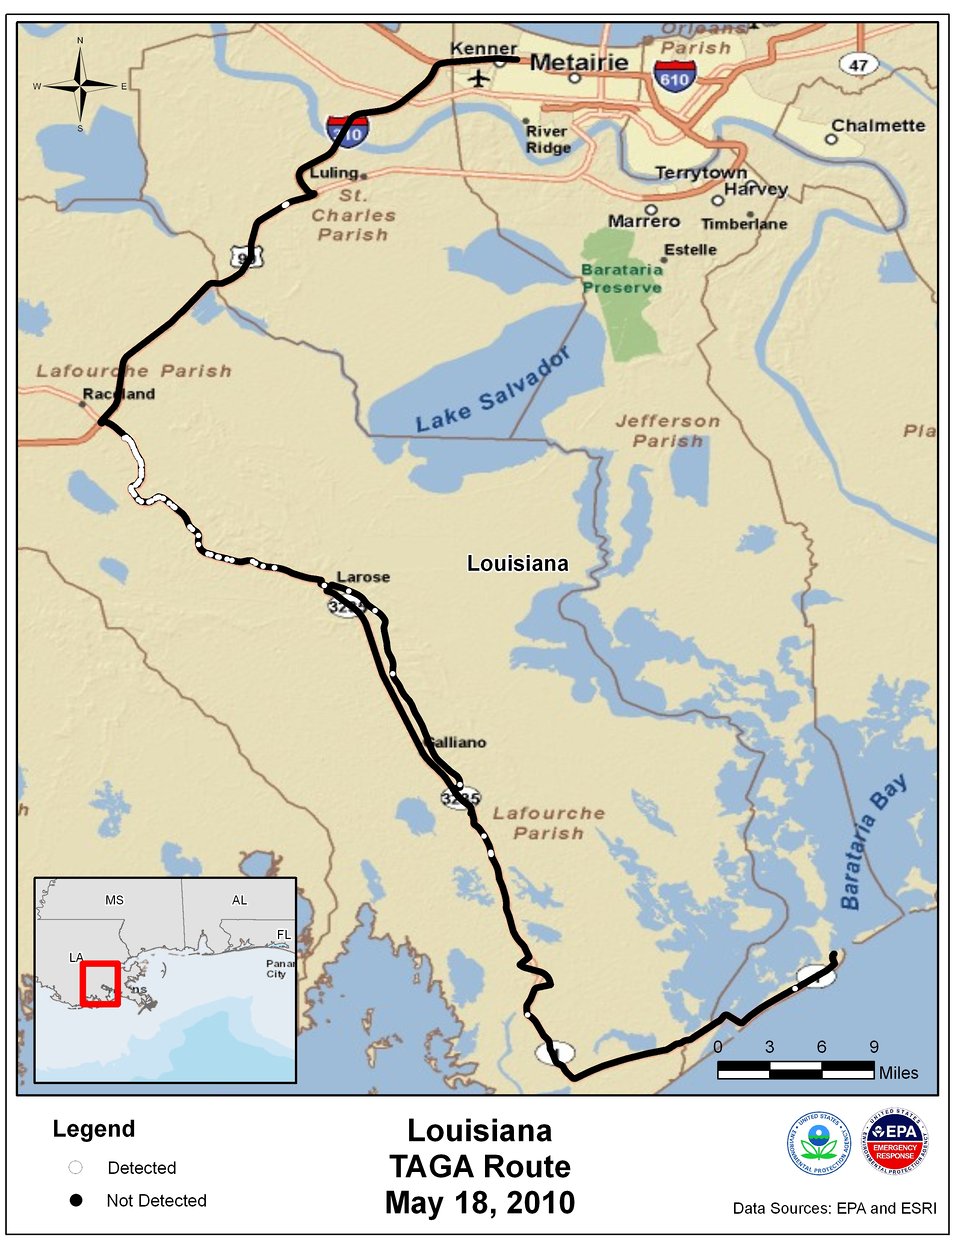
EPA TAGA Air Monitoring Locations May 18, 2010